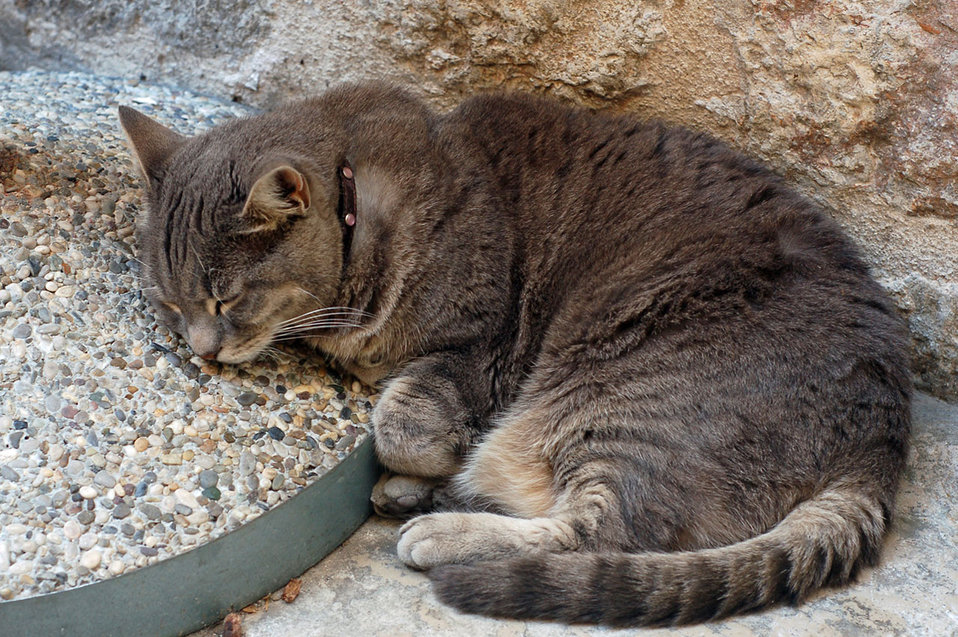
Grey cat sleeping, on a beige and grey background.